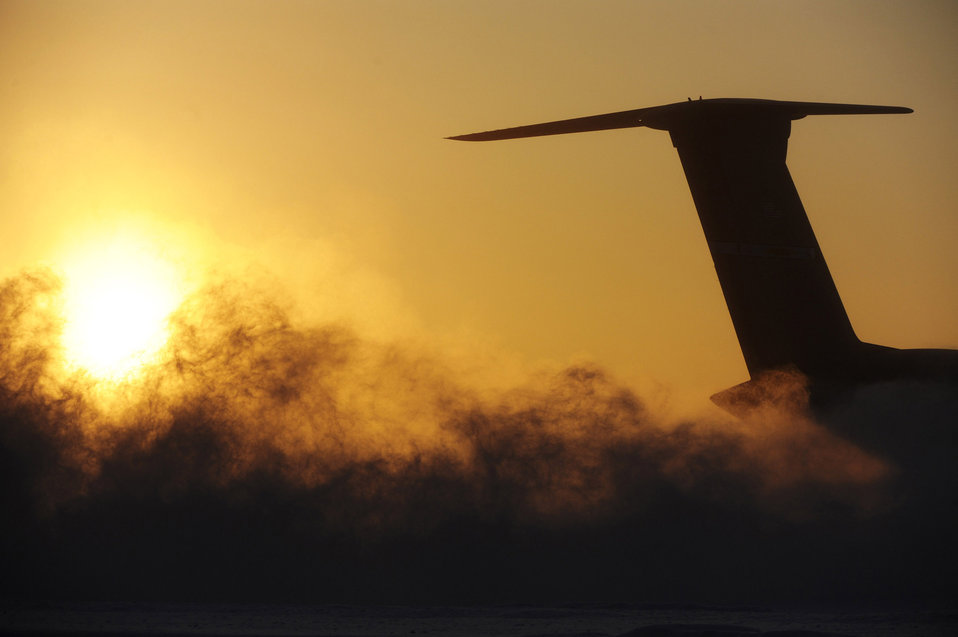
Super Galaxy endures super cold weather

A C-5M Super Galaxy drives through the deep snow on the flightline while conducting cold weather testing Dec. 12 at Eielson Air Force Base, Alaska. This is the first C-5M with new CF-6 engines, pylons and auxiliary power units, with upgrades to the aircraft's skin and frame, flight controls, landing gear and the pressurization system that went through cold-weather testing. The aircraft sat for more than 24 hours in temperatures low as minus 25 degrees.